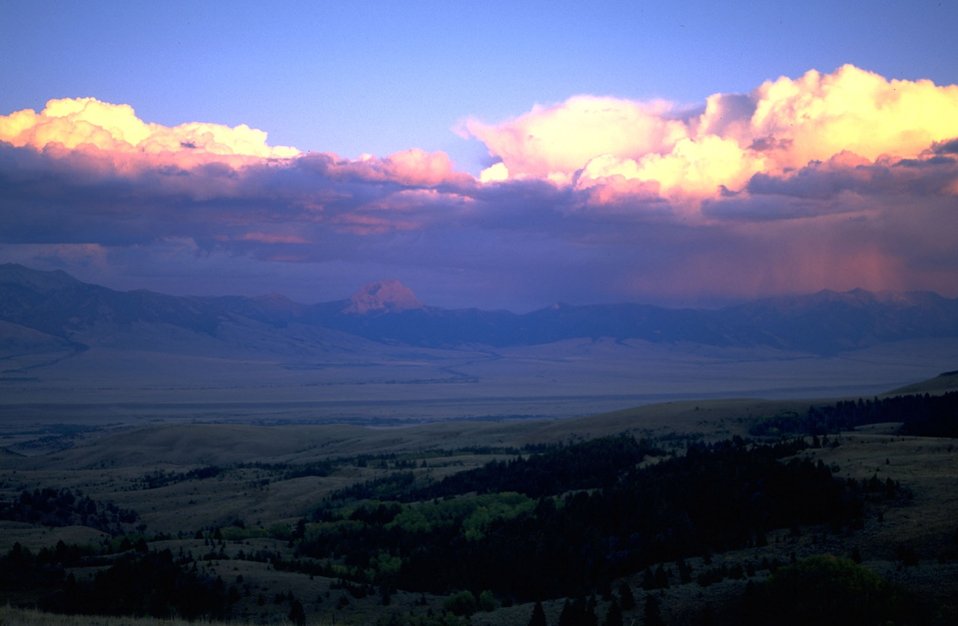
Cloud bank above Madison Range at sunset